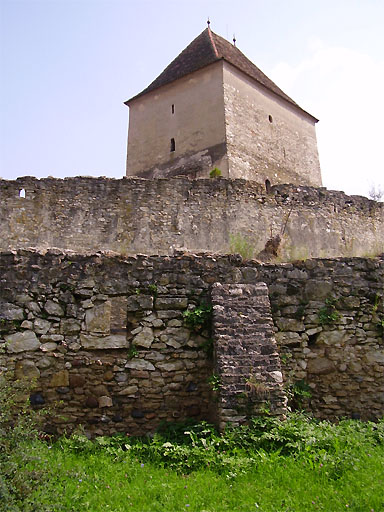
Câlnic Fortress, Alba, Romania This is a photo of a historic monument in județul Alba , classified with number AB-II-m-A-00196.04